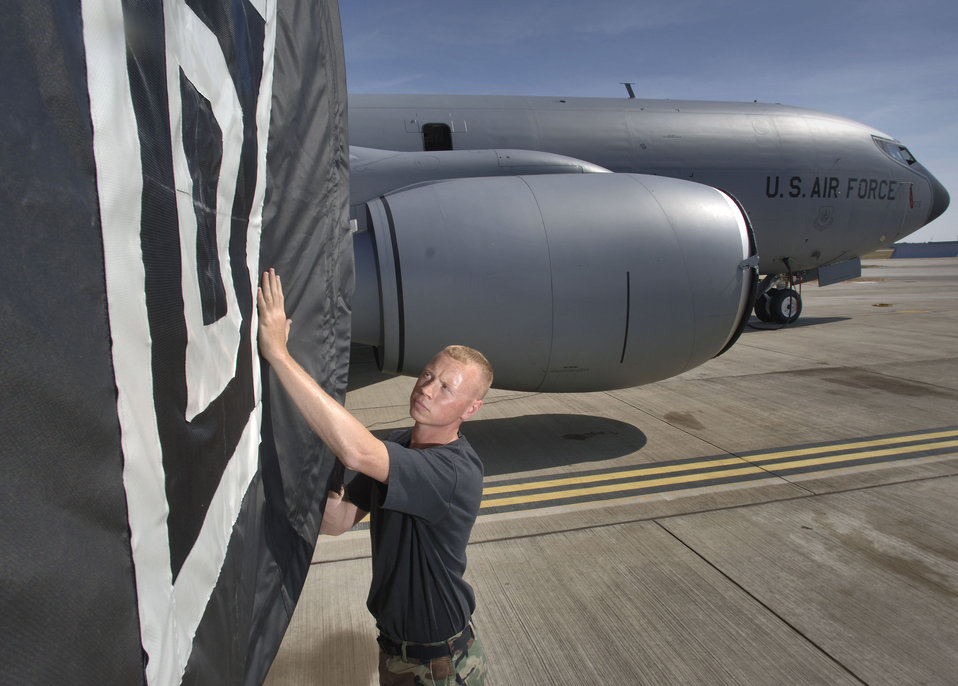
Mildenhall's tanker services in high demand

Staff Sgt. Craig Lambert checks an engine cover during a preflight inspection on a KC-135 Stratotanker at Royal Air Force Mildenhall, England, on July 24. The sergeant is with the 100th Aircraft Maintenance Squadron. The